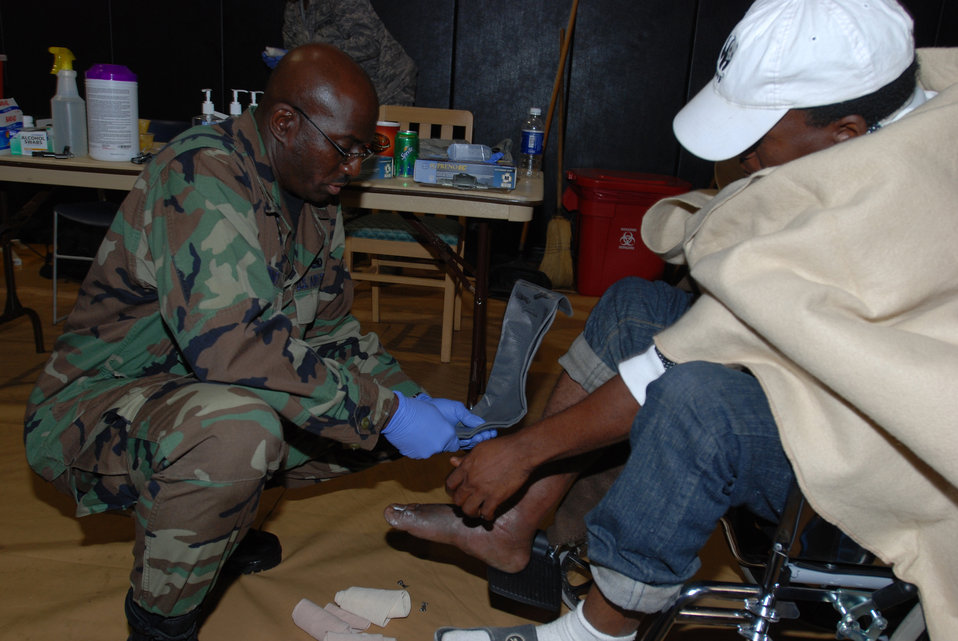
Operation Unified Response

Maj. Sir Rodney, a 482nd Medical Squadron nurse, shapes a splint for an evacuee from Haiti Jan. 20 at Homestead Air Reserve Base, Fla. Air Force officials are using C-130 Hercules aircraft to evacuate people from Haiti following the 7.0 magnitude earthquake that devastated the country.